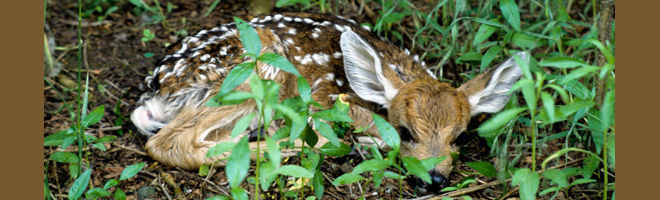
Fawn - Conboy Lake National Wildlife Refuge

A fawn is seen here in the vegetation at Conboy Lake National Wildlife Refuge, located on the eastern slopes of Mount Adams in Washington State.